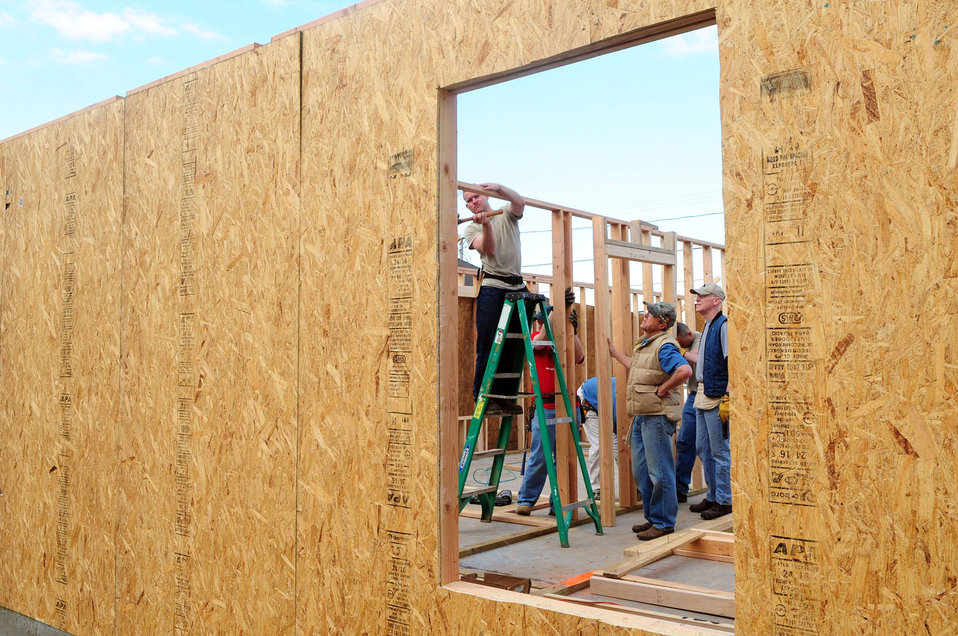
Barksdale Airmen build homes for needy families

Members of Barksdale Air Force Base, La., 2nd Civil Engineer Squadron and the local community secure an interior wall on the first day of construction of a Habitat for Humanity home March 20, 2010, in Shreveport, La. The home is being constructed for the Hart family, formerly from New Orleans who came to Shreveport after Hurricane Katrina.